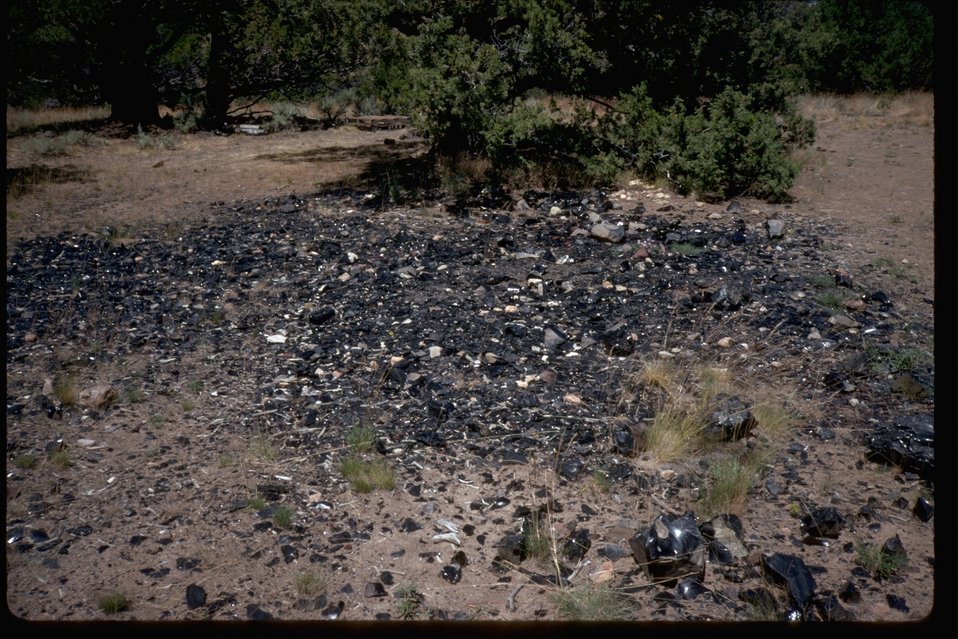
Obsidian located on the flanks of Glass Butte.